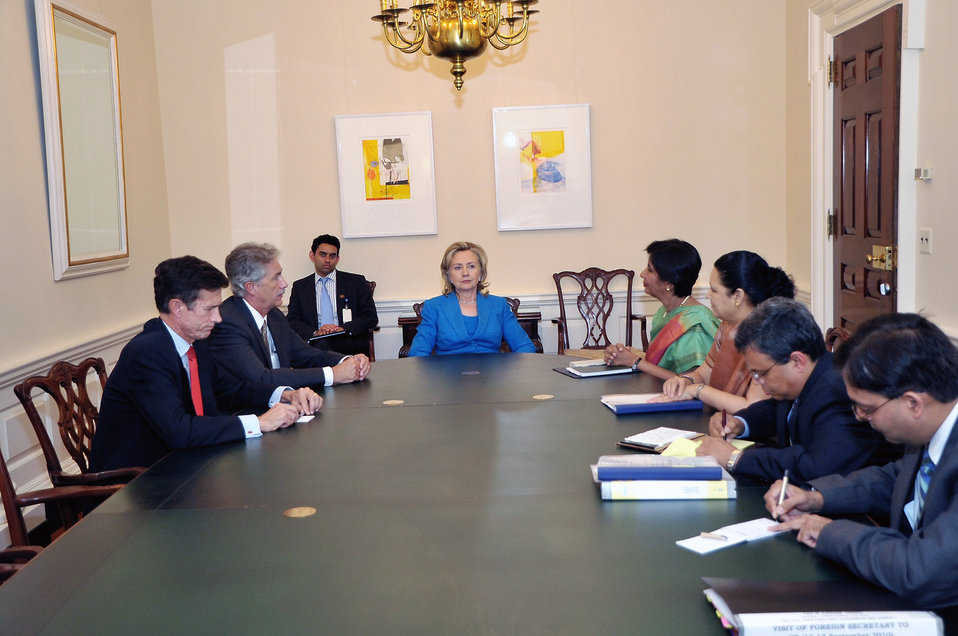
Secretary Clinton, Under Secretary Burns, and Assistant Secretary Blake Meet With Indian Foreign Secretary Rao

U.S. Secretary of State Hillary Rodham Clinton, U.S. Under Secretary of State for Political Affairs William J. Burns (second on the left), and U.S. Assistant Secretary of State for South and Central Asian Affairs Robert O. Blake (closest to the camera on the right) Indian Foreign Secretary Nirupama Rao at the U.S. Department of State in Washington, D.C., on September 17, 2010.